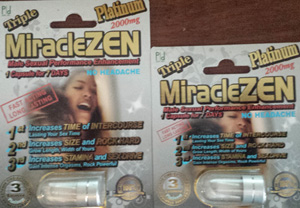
RECALLED – Dietary Supplement for Sexual Enhancement

January 9, 2014 – Product Recall – Midwest Wholesale Issues Voluntary Recall of Boost Ultra, XZone Gold, Sexy Monkey, Triple MiracleZen Platinum, Magic for Men, 'New' Extenze, and New XZen Platinum Marketed as a Dietary Supplements Due to the Presence of Undeclared Drug Ingredients. For additional information, please refer to the company issued press release available on FDA’s web site at www.fda.gov/Safety/Recalls/UCM381299.

And read this Consumer Update: Beware of Fraudulent ‘Dietary Supplements’